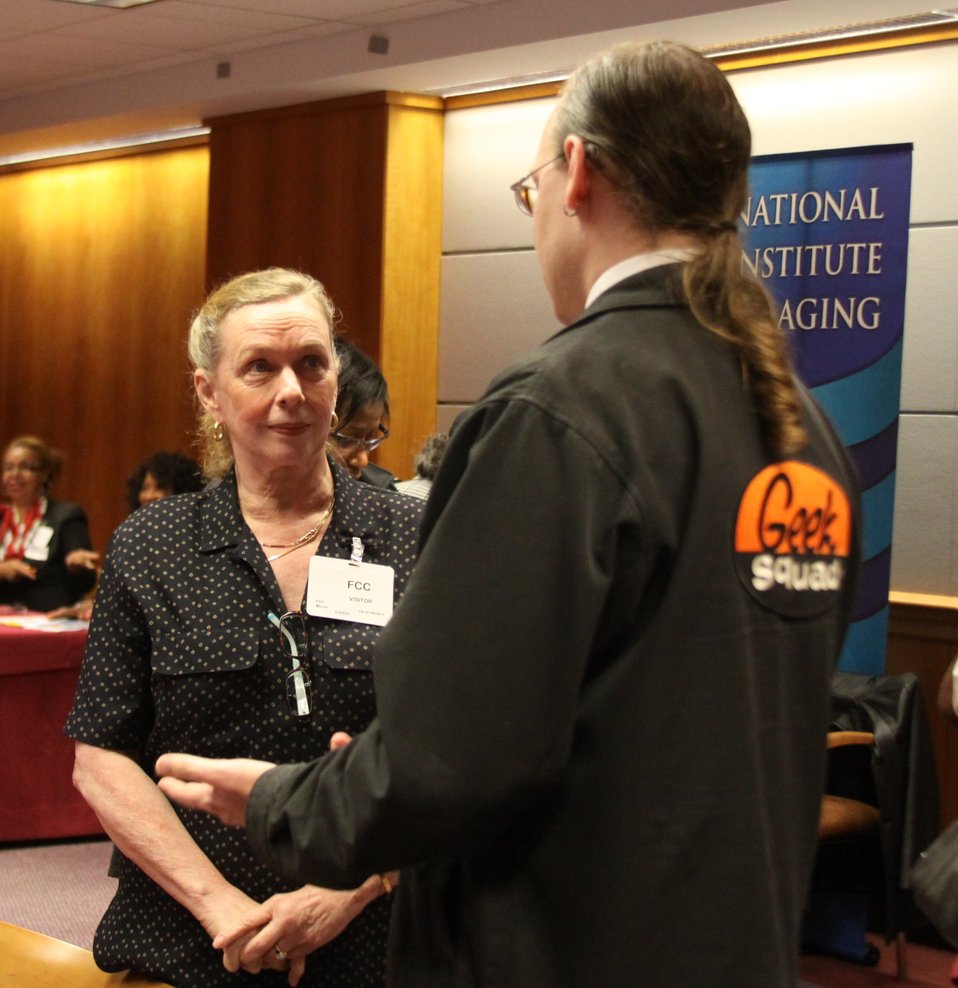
Digital Literacy for Seniors: How the Internet Can Benefit Older Americans, April 24, 2013